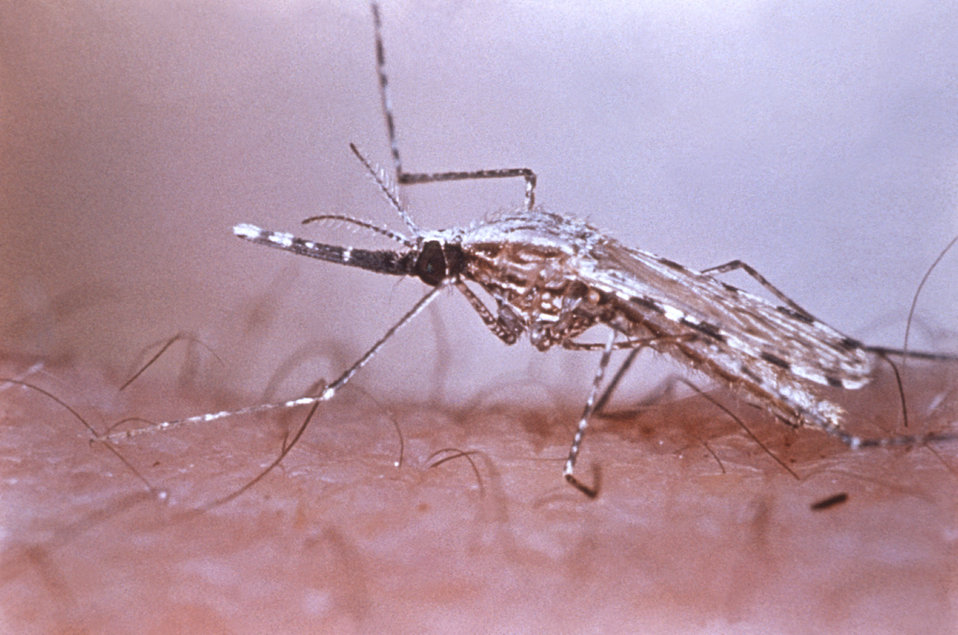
This Anopheles stephensi mosquito has landed on a human host, and is about to obtain a blood meal.